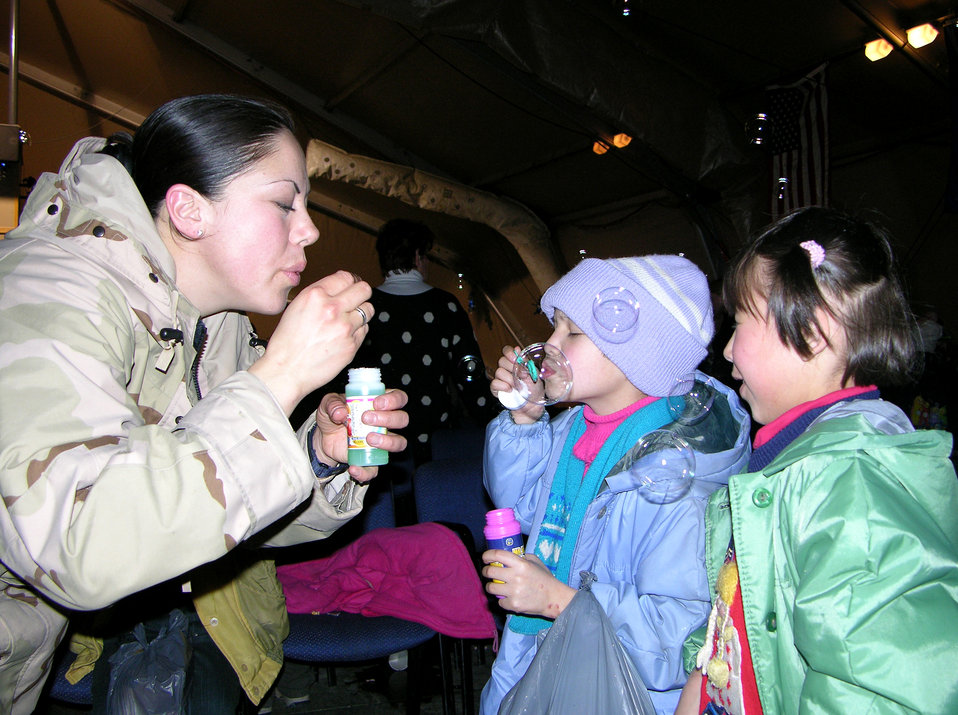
Sharing some bubbly

MANAS AIR BASE, Kyrgyzstan -- Staff Sgt. Francheska Pena shows a young girl from the nearby Veanno Antovsky Orphanage how to blow bubbles. Sergeant Pena is one of the many volunteers who made it possible for 93 orphans to attend a carnival here. The children were treated to numerous crafts like finger painting, coloring, making bead necklaces and miniature golf. Sergeant Pena is assigned to the 376th Expeditionary Security Forces Squadron.